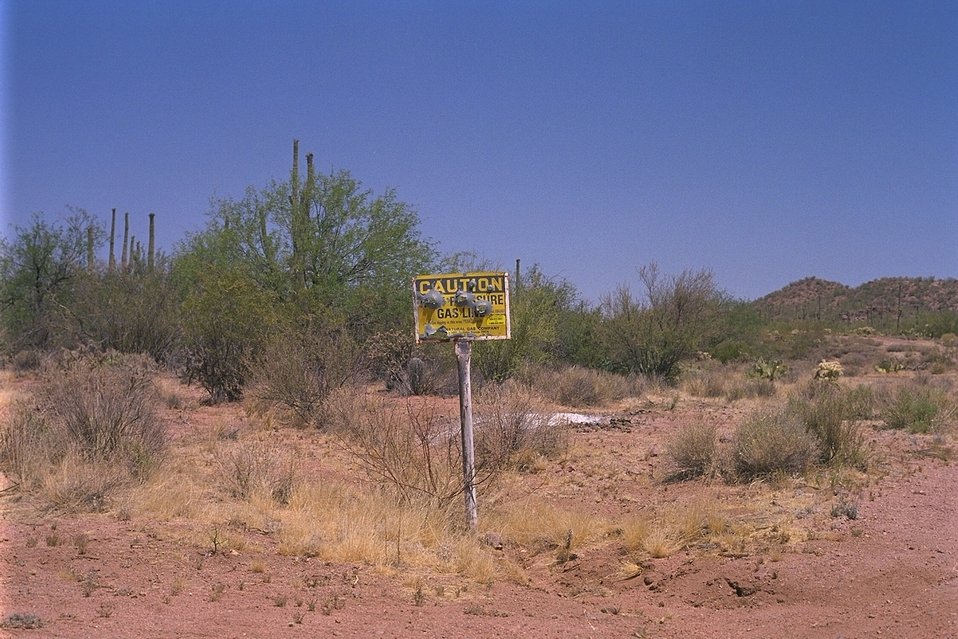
Warning signes are posted to let visitors know of dangers in the surrounding areas in the Iornwood Forest National Monument.